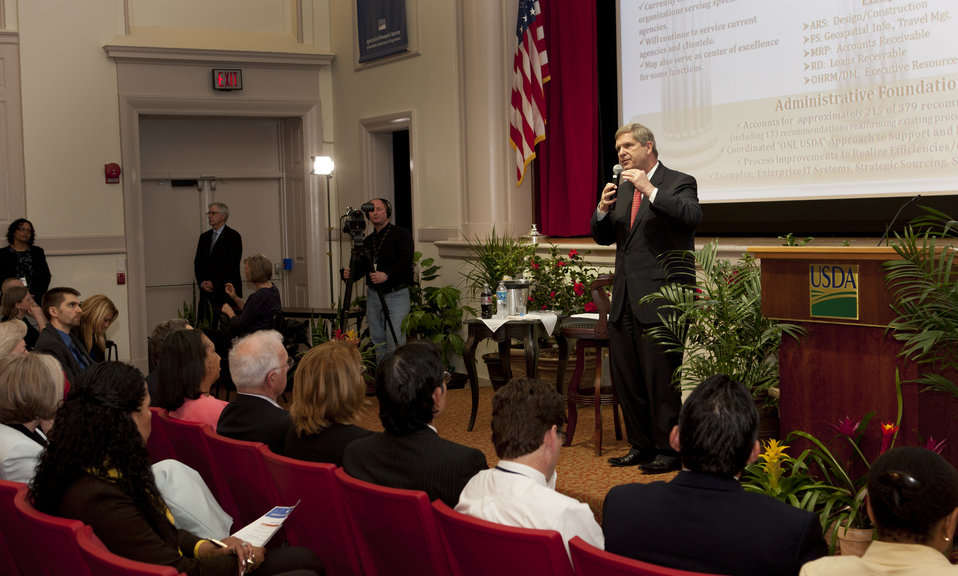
Agriculture Secretary Tom Vilsack answers a question from an employee at the U.S. Department of Agriculture (USDA) Carver Center in Beltsville, MD at the USDA Employees Ask the Secretary Session on Wednesday, March 21, 2012.